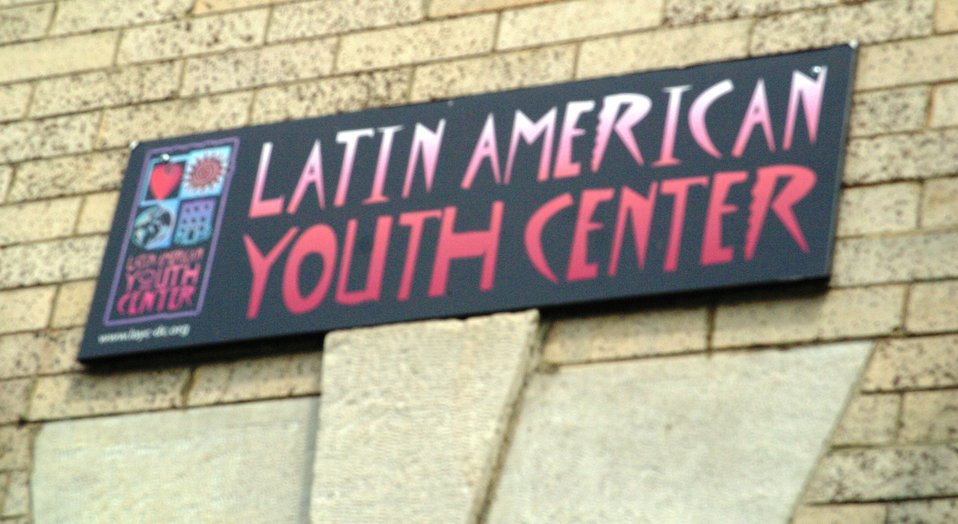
Connect 2 Compete: LULAC 8.7.12

FCC Chairman Julius Genachowski joined representatives from Connect2Compete (C2C), Redemtech, the League of United Latin American Citizens (LULAC), and the Latin American Youth Center (LAYC) to announce the launch of a nationwide computer recycling and donation effort to support C2C’s efforts to close the digital divide.